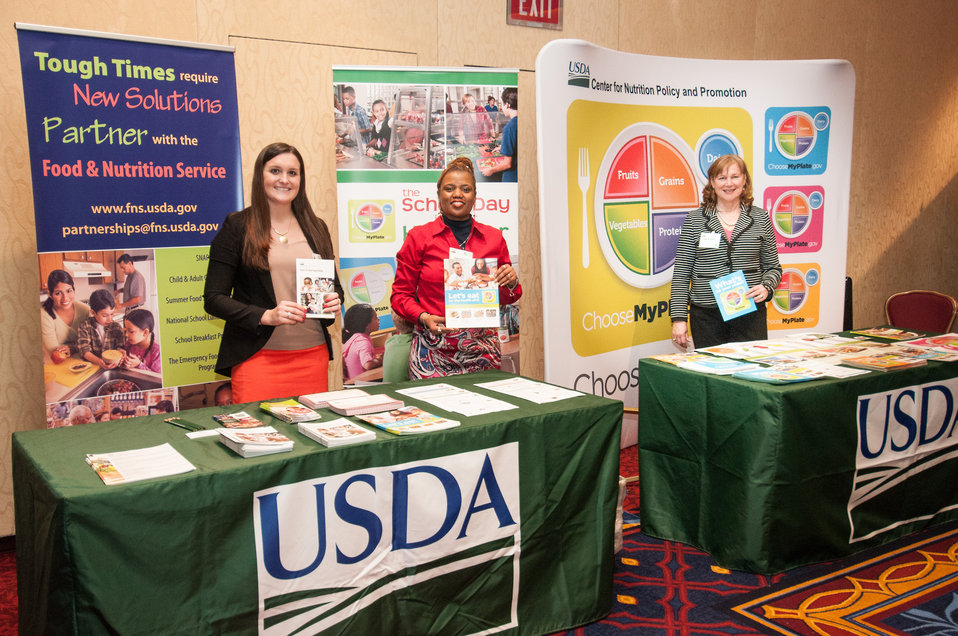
U.S. Department of Agriculture (USDA) Food and Nutrition Service (FNS) Intern Kristin Caulley, left, Partnership and Outreach Program Analyst Celeste Perkins, Center, and Center for Nutrition Policy and Promotion (CNPP) Elaine McLaughlin, M.S., R.D. support their information areas during the 2013 Agricultural Outlook Forum, held at the Crystal Gateway Marriott Hotel, Arlington, Virginia on Thursday, Feb. 21, 2013. This annual Forum brings together producers, policymakers, and business, government, and industry leaders to meet, exchange ideas, and discuss timely agriculture issues.